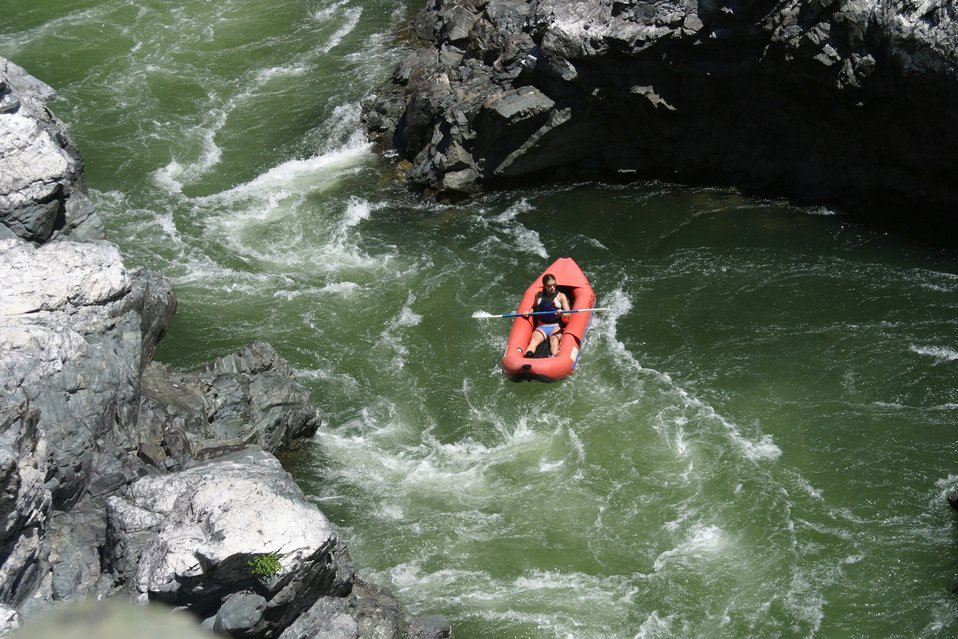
Boaters as seen from the Rogue River Trail between Mule Creek and Blossom Rapids.